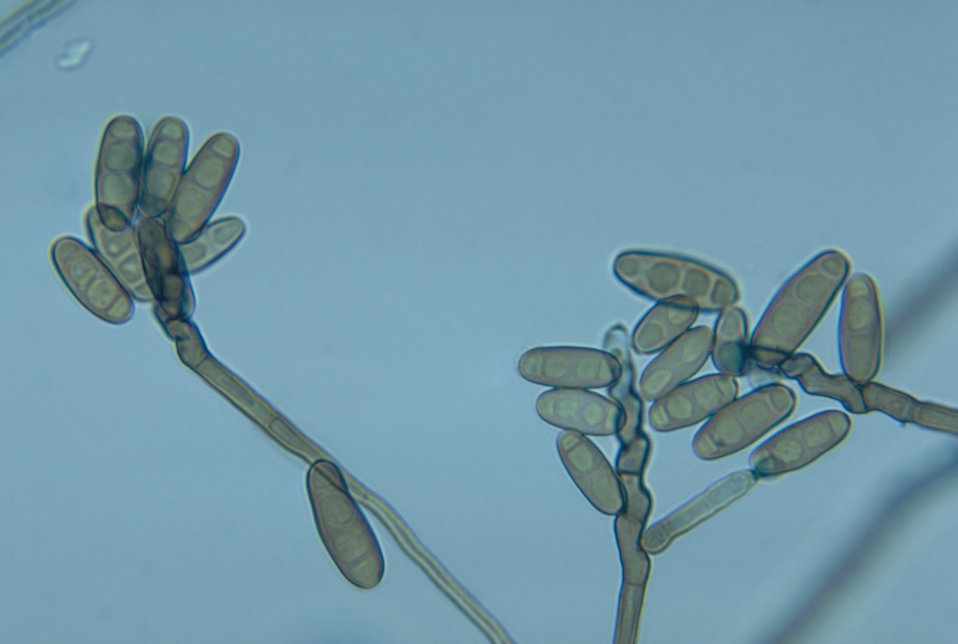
This photomicrograph shows conidiophores and conidia of the fungus Curvularia harveyi.